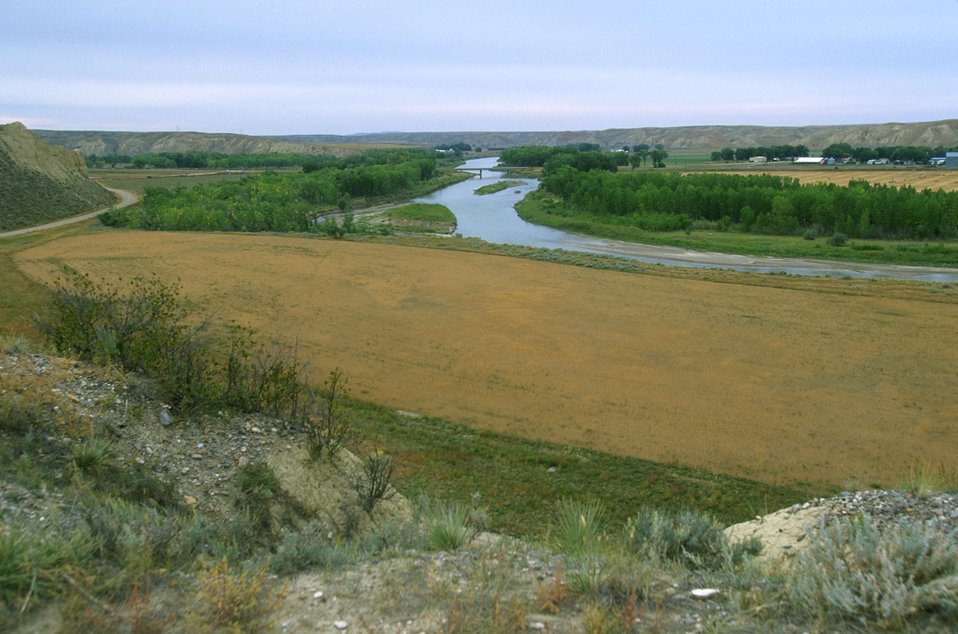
Richard Wood Watchable Wildlife Area